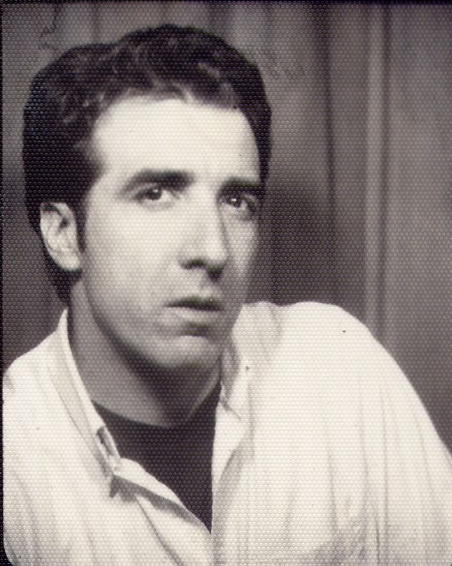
Dan Geist in Chicago photo booth.